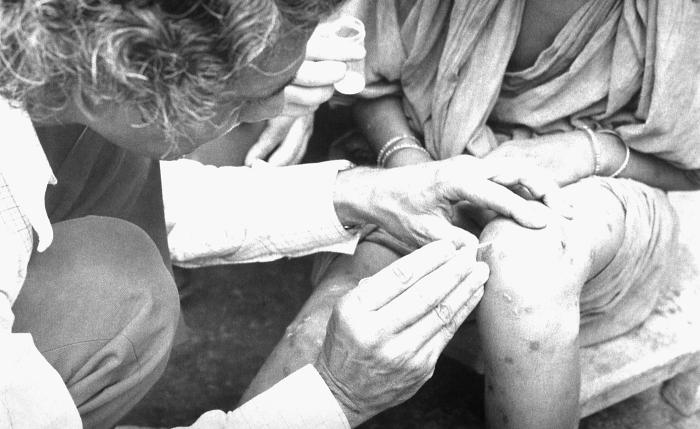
This 1975 image depicted World Health Organization (WHO) epidemiologist Dr. Hari Mehta, collecting the lesion scabs from the legs of a suspected smallpox sufferer, which will be sent to a laboratory for a diagnostic confirmation.Today, laboratory criteria for confirmation* include a polymerase chain reaction (PCR) identification of variola DNA in a clinical specimen, OR the isolation of smallpox (variola) virus from a clinical specimen, i.e., WHO Smallpox Reference laboratory or laboratory with appropriate reference capabilities, with variola PCR confirmation.*Laboratory diagnostic testing for variola virus should be conducted in a CDC Laboratory Response Network (LRN) laboratory utilizing LRN-approved PCR tests and protocols for variola virus. Initial confirmation of a smallpox outbreak requires additional testing at CDC.